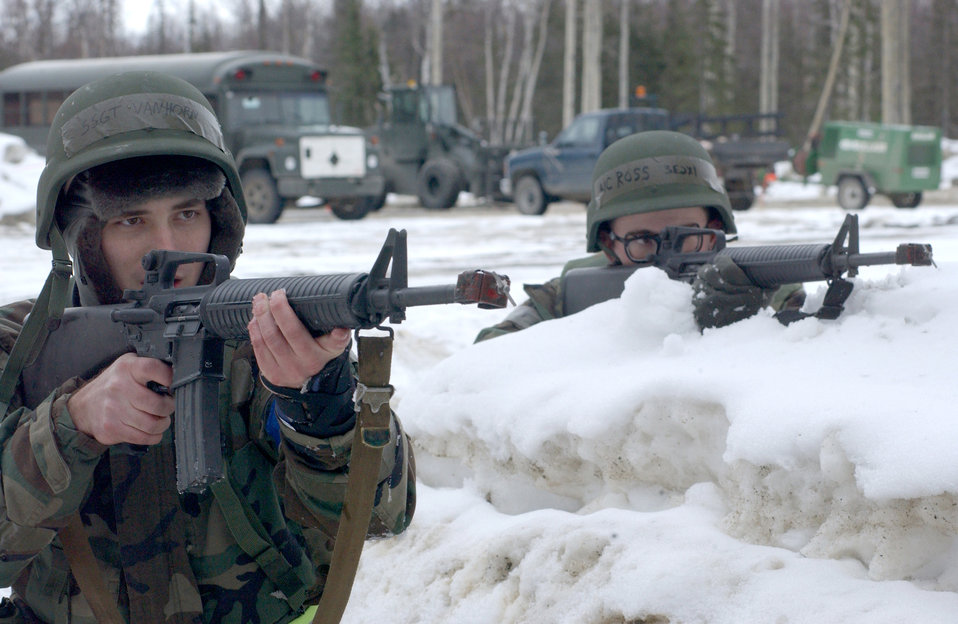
Snowy exercise

ELMENDORF AIR FORCE BASE, Alaska -- Staff Sgt. David Vanhorn (left) and Airman 1st Class Derrik Ross dig into position before confronting an intruder at the edge of the runway on